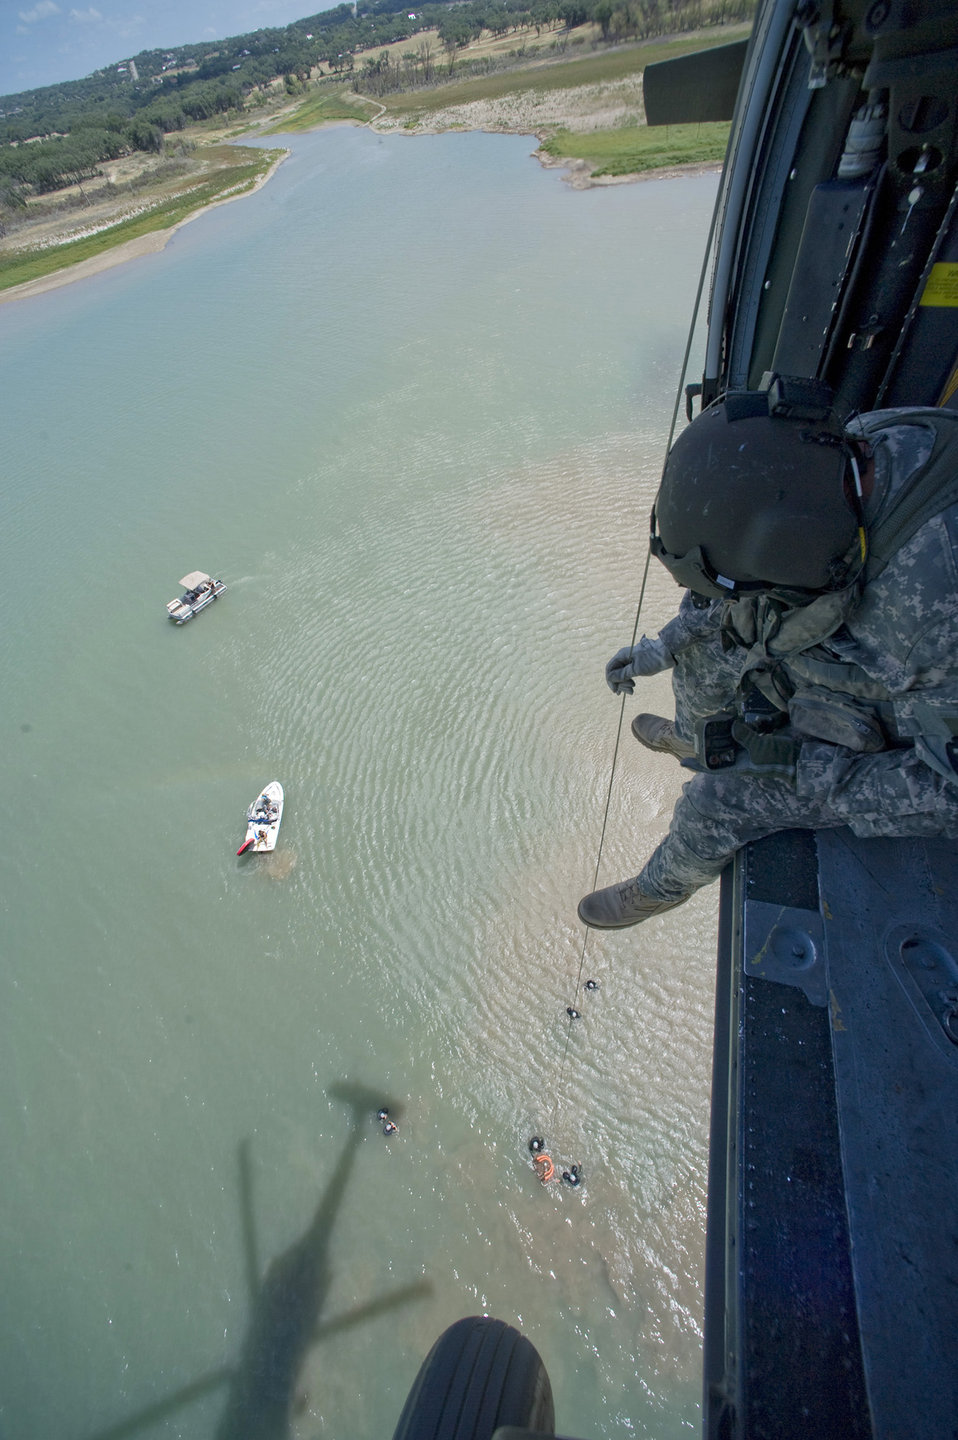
Air Guard flight crews undergo water survival training

U.S. Army Sgt. Teddy Cole lowers a water rescue basket during refresher aircrew water survival training at Canyon Lake, Texas. Sergeant Cole is a UH-60 Black Hawk crew chief assigned to the 149th Aviation Regiment in San Antonio. The refresher training was conducted for members of the 149th Fighter Wing also based in San Antonio. Both units belong to the Texas National Guard.